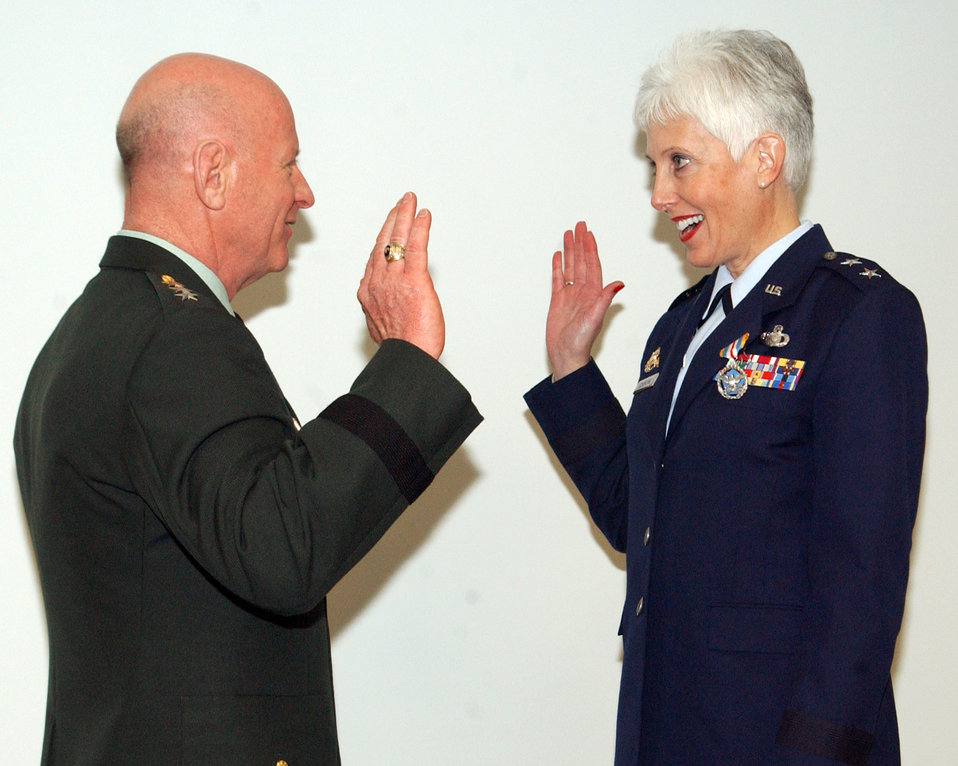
Airman first woman to lead Guard Bureau's Joint Staff

WASHINGTON (AFPN) -- Army Lt. Gen. H. Steven Blum gives Maj. Gen. Terry Scherling the oath of office at a ceremony here Jan. 5. General Scherling is the first woman to become director of the National Guard Bureau's Joint Staff. General Blum is the National Guard Bureau chief.